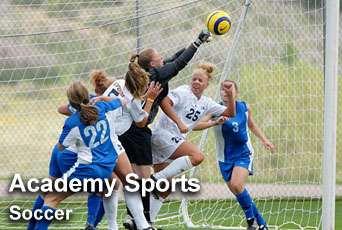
Academy sports: Soccer

For up-to-date scores on all U.S. Air Force Academy sports, visit their Web site at www.goairforcefalcons.com.